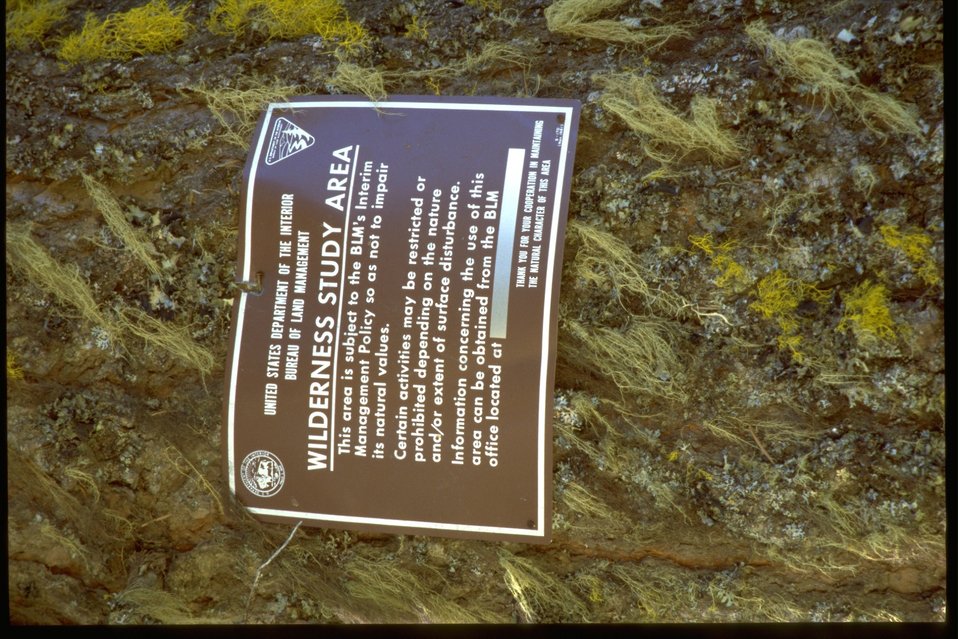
Wilderness Study Area sign.